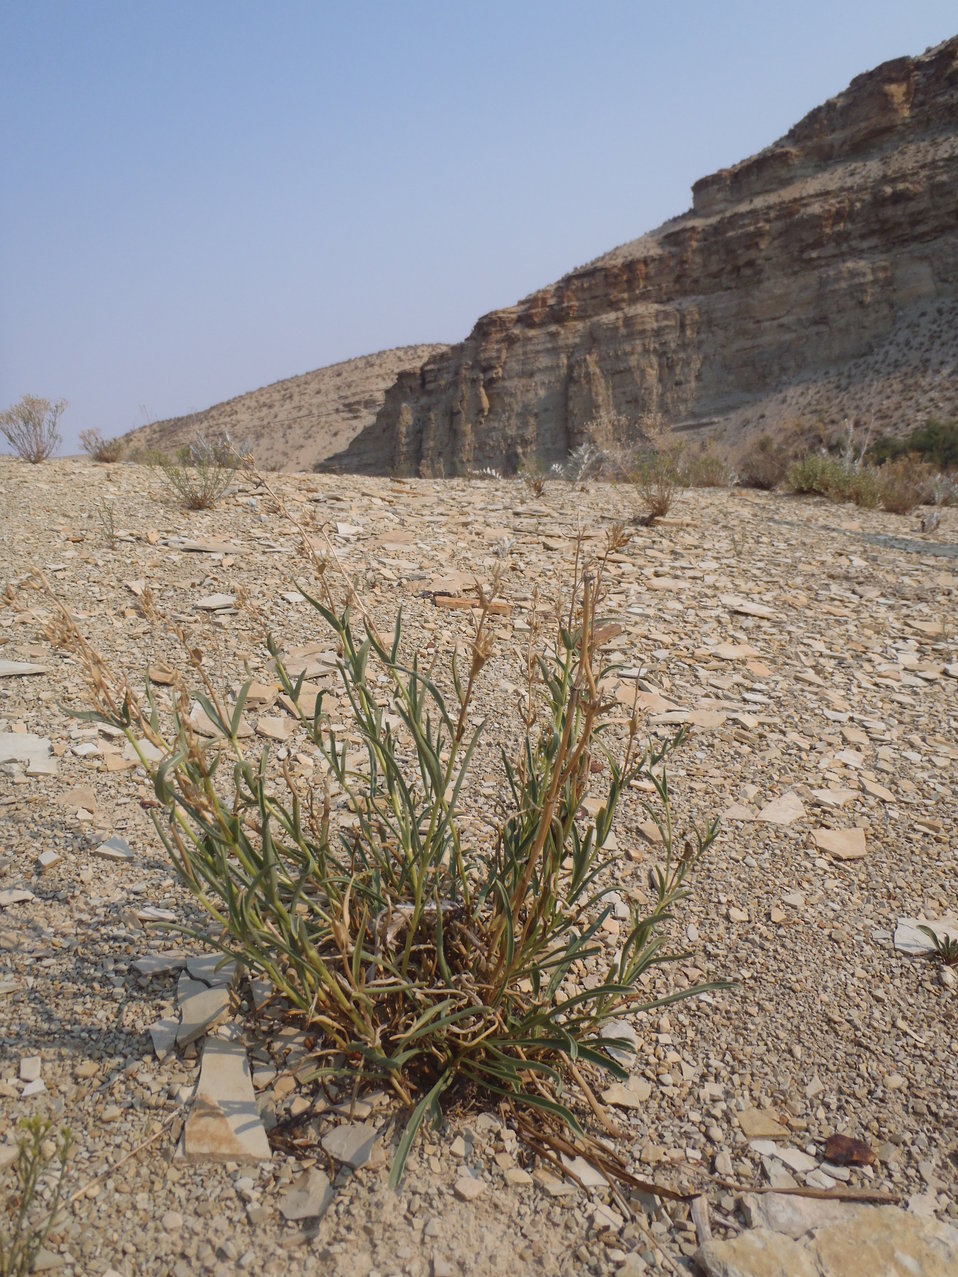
White River beardtongue (Penstemon scariosus var. albifluvis) is found only in the Uintah basin in Utah and Colorado. The species faces similar threats as Graham’s beardtongue (Penstemon grahamii) but may be more vulnerable due to its even smaller population sizes.